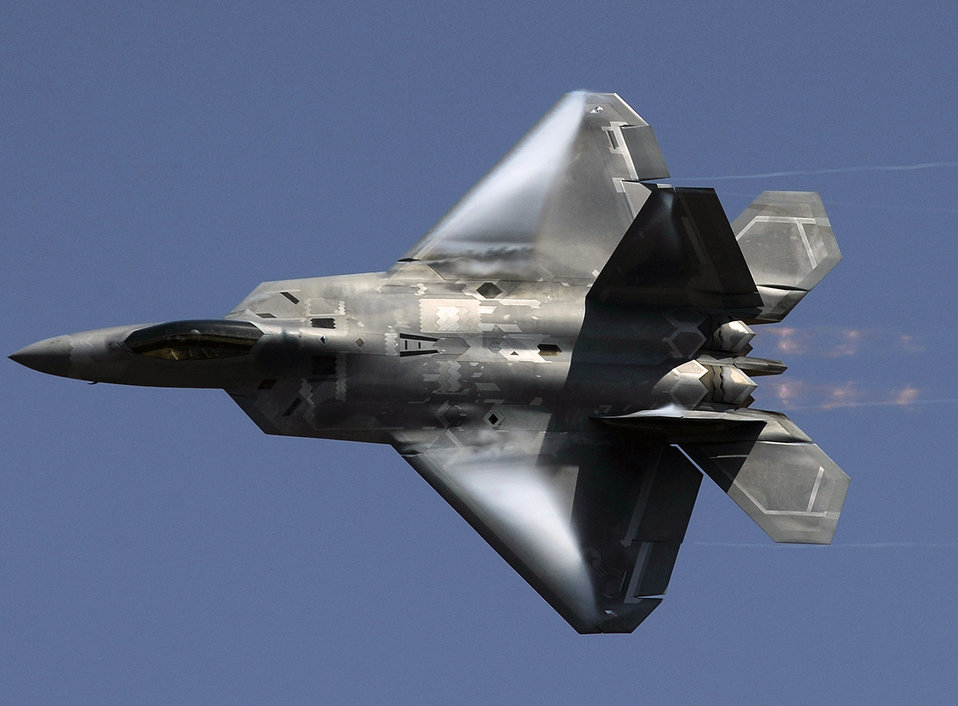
Soaring over the crowd

Maj. Dave Skalicky, an F-22 Raptor demonstration pilot, soars above the crowd April 26 during the Air Power over Hampton Roads air show at Langley Air Force Base, Va. This annual open house helps educate the public on Air Force capabilities and shows appreciation to the local community.